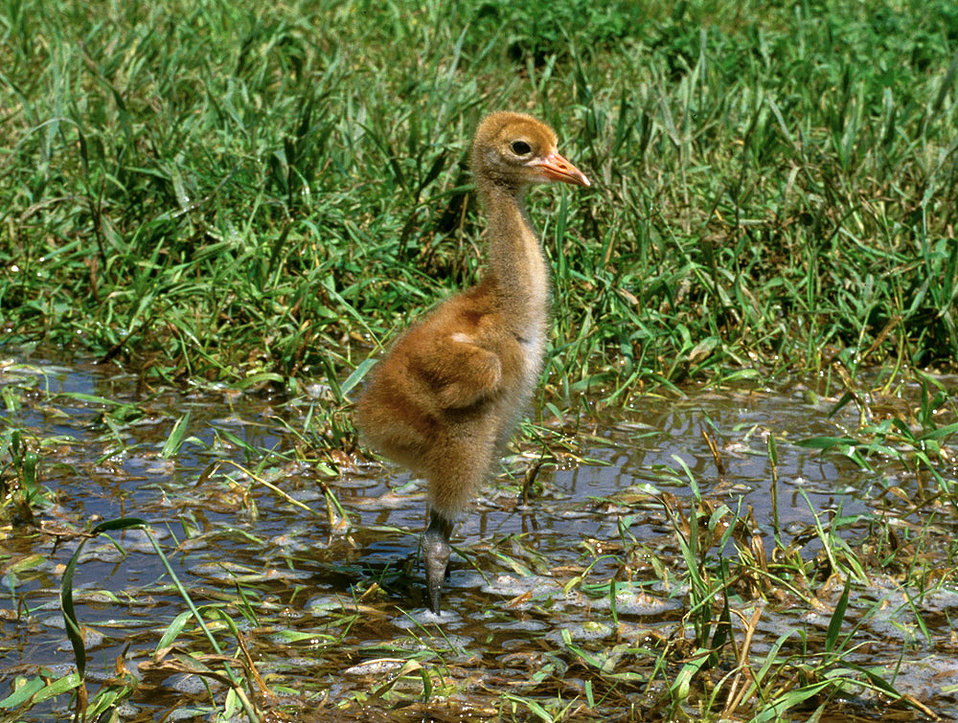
Whooping crane chick.